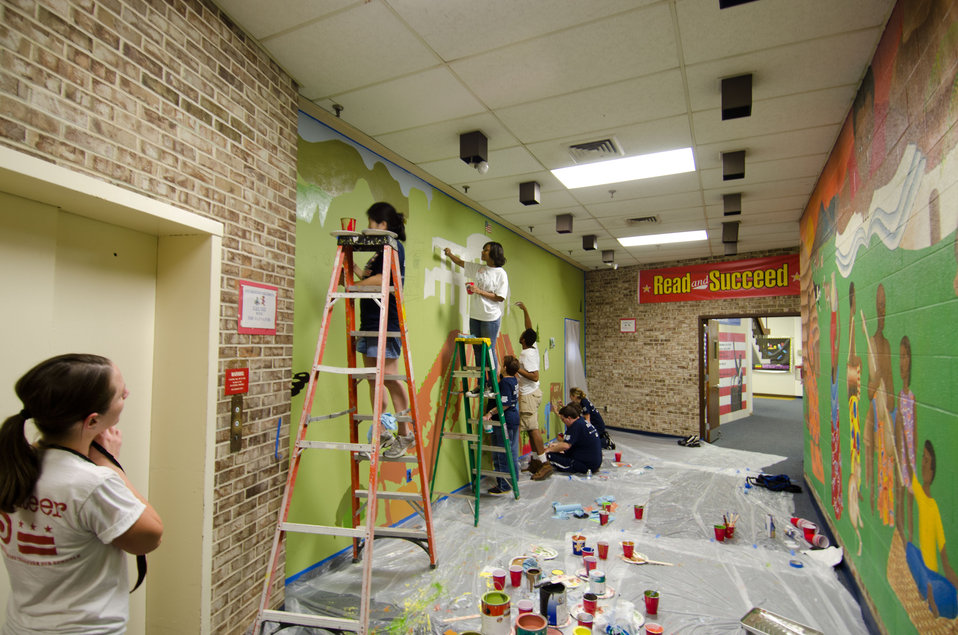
U.S. Department of Agriculture (USDA) People’s Garden Executive Master Gardeners, friends, and family, along with Washington Capitals fans are volunteering in District of Columbia Public Schools’ (DCPS) Beautification Day, on Saturday, August 25, 2012, at Thurgood Marshall Elementary School, in Washington, D.C. Each year people are invited to help “spruce up” public school facilities in preparation for the first day of school. More than 70 volunteers pitched in at this large school facility. The People’s Garden effort involves building and painting raised planter boxes, then preparing the soil mixture so they are “ready to grow.” Additionally, a team that includes descendants of U.S. Supreme Court Justice Thurgood Marshall assembles a prefabricated garden toolshed. The Justice’s son, John Marshall leads the team, which includes Brianna the Justice’s great-grand daughter in one of many multi-generational efforts at this school today. Washington Capitals Forward Mike Riberio, his family and mascot Slapshot participated in every project underway at Marshall School. From the outside gardens, to inside mural painting, and robotics worktable construction, the teams made their goals.